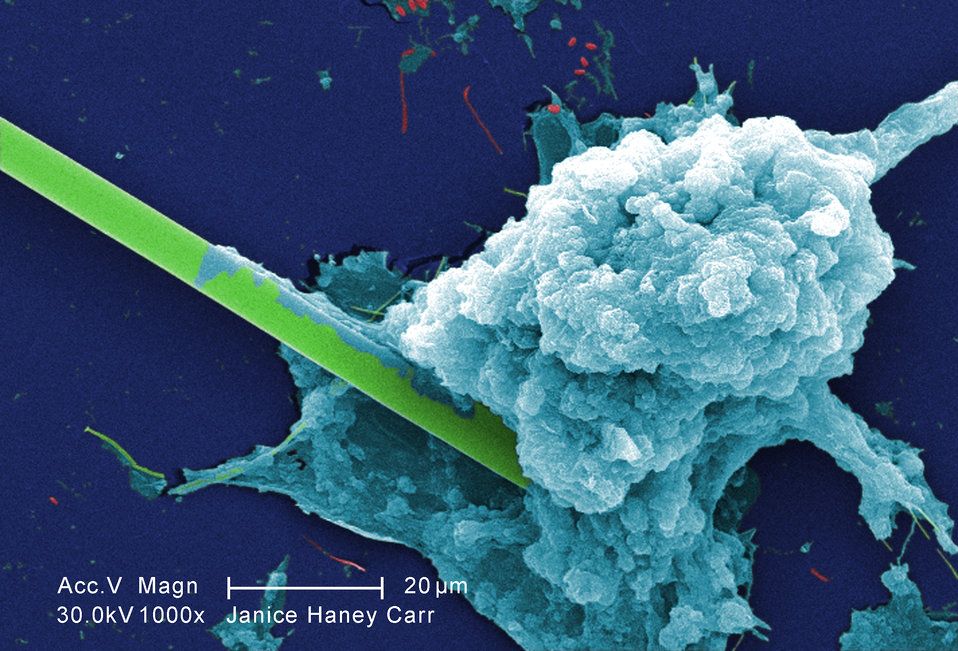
At a magnification of 1000X, this digitally-colorized scanning electron micrograph (SEM) of an untreated water specimen extracted from a wild stream mainly used to control flooding during inclement weather, revealed the presence of unidentified organisms, which included bacteria, protozoa, and algae. In this particular image, a needle-shaped structure appeared to be caught up in an amorphous gelatinous biofilm, which though unidentified, appeared to be the green algae, Ankistrodesmus. See PHIL 11664 for another view of this spear-shaped organism.